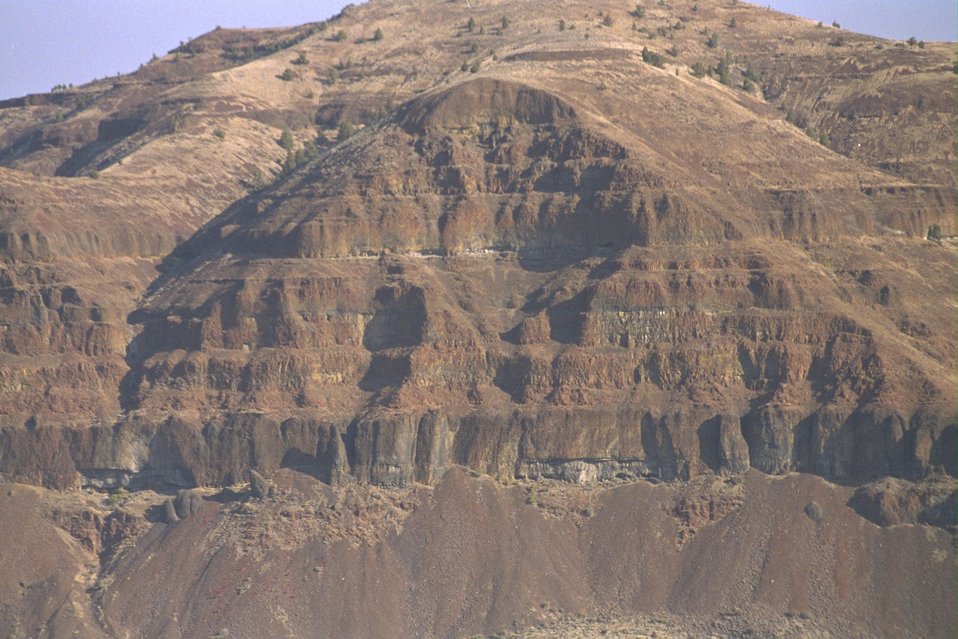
A cone-shaped basalt cliff across the John Day River from a viewpoint.